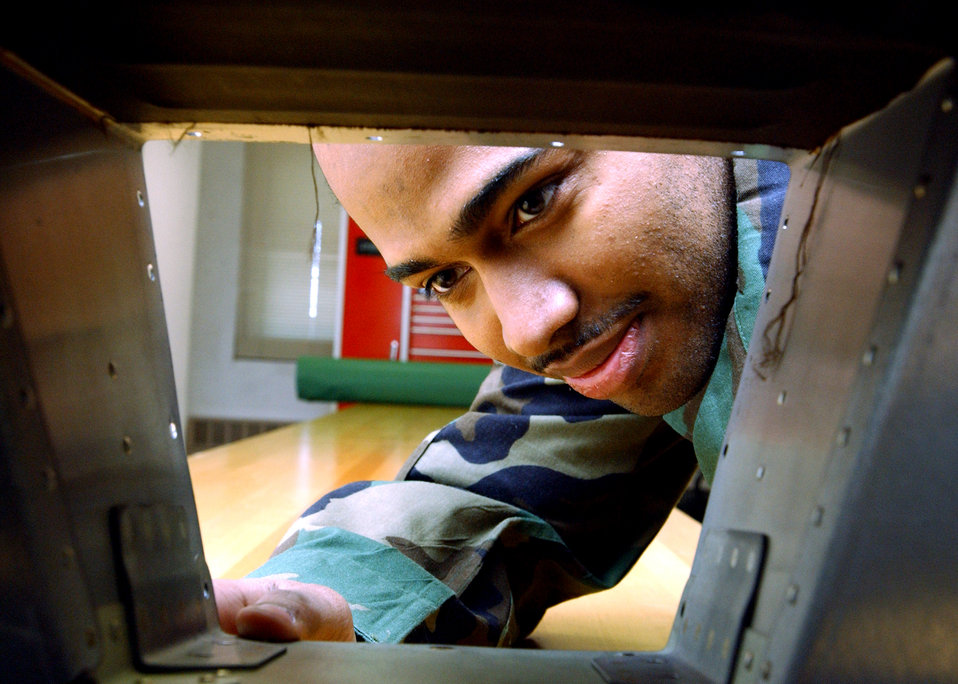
Seat check

AVIANO AIR BASE, Italy -- Staff Sgt. Roy Washington inspects an ejection seat here March 2. He is a survival equipment craftsman with the 31st Maintenance Squadron.